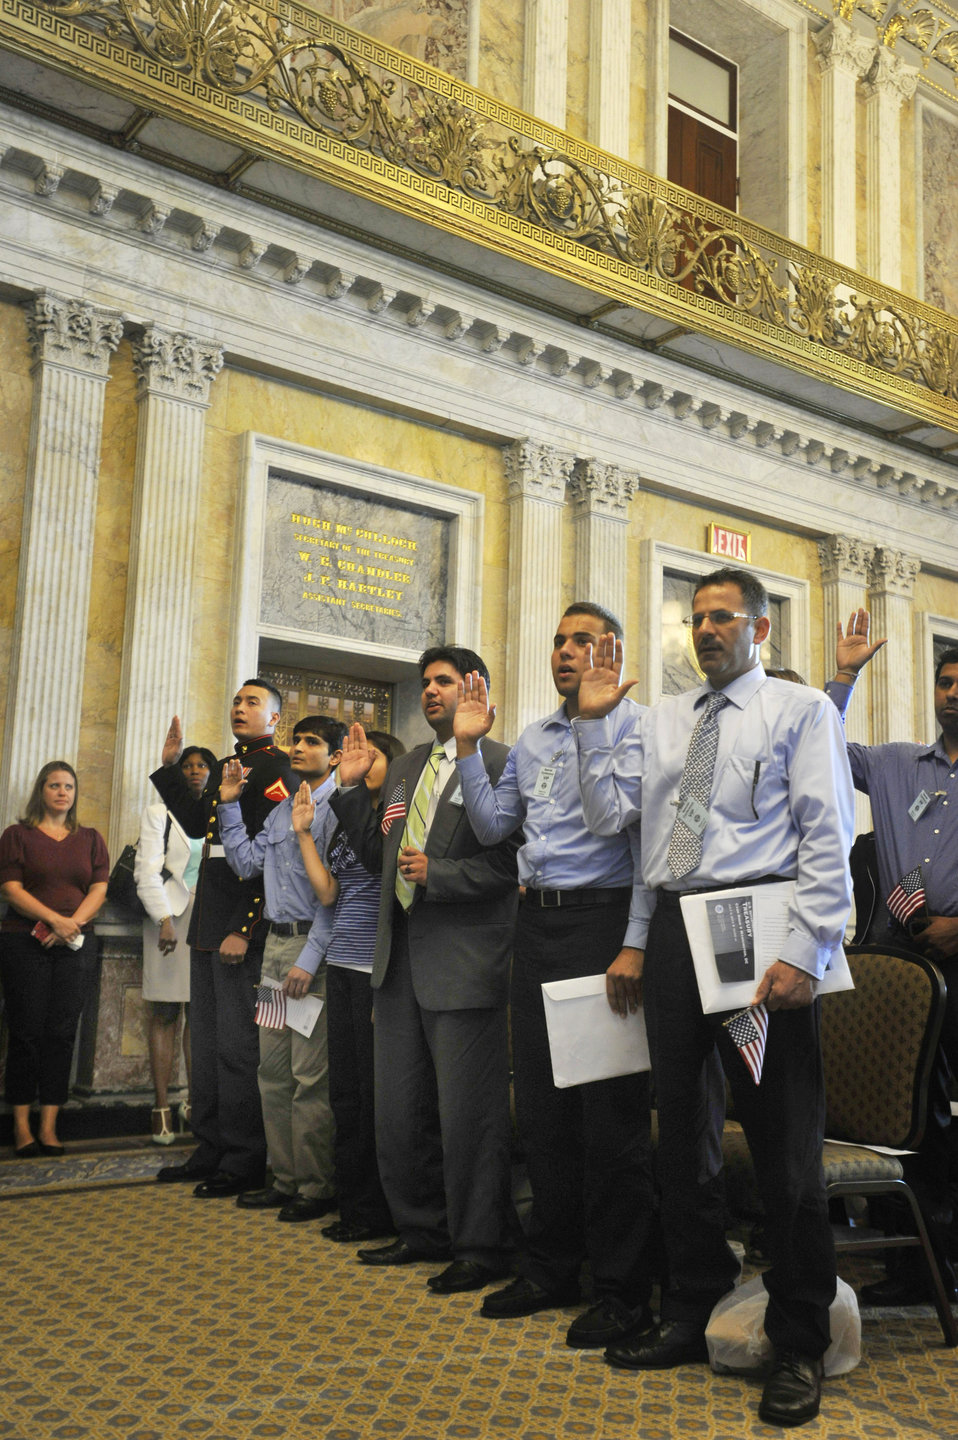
Naturalization Ceremony at Treasury

July 3, 2013 - 30 new citizens taking the Oath of Allegiance to the United States during a ceremony at the Treasury Department